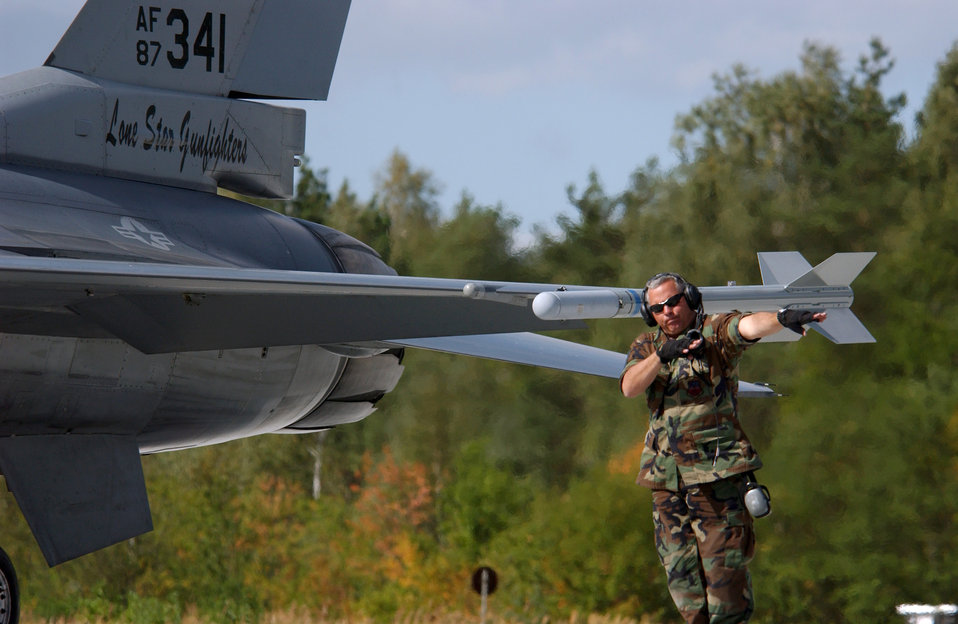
Falcons in Poland

LASK AIR BASE, Poland -- Tech. Sgt. Dwayne Gore launches an F-16 Fighting Falcon for a training mission here Sept. 16. The Texas Air National Guard's 182nd Fighter Squadron is here to familiarize members of the Polish Air Force with the F-16 capabilities along with its day-to-day operations and maintenance. Sergeant Gore is a crew chief assigned at Lackland Air Force Base, Texas.